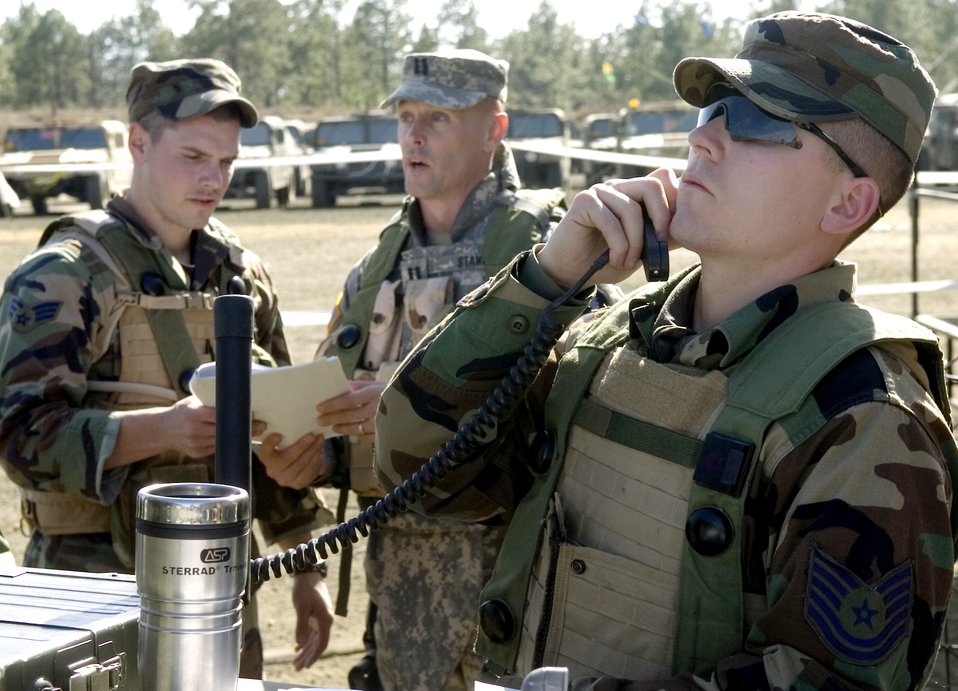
Air Warrior II

FORT POLK, La. (AFPN) -- Tech. Sgt. Dan Kurtin calls in air support while Senior Airman Ty Terpening coordinates operations with Army Capt. Jeff Staker during an Air Warrior II exercise here Feb. 9. Air Warrior II is a joint and total force exercise designed to give deploying units a realistic training environment. The exercise incorporates air power with Army maneuvers to help Army and Air Force units work better together in the field. Sergeant Kurtin and Airman Terpening are Guardsmen with the 169th Air Support Operations Squadron in Peoria, Ill. Captain Staker is an intelligence officer with the 1-133rd Infantry Battalion.